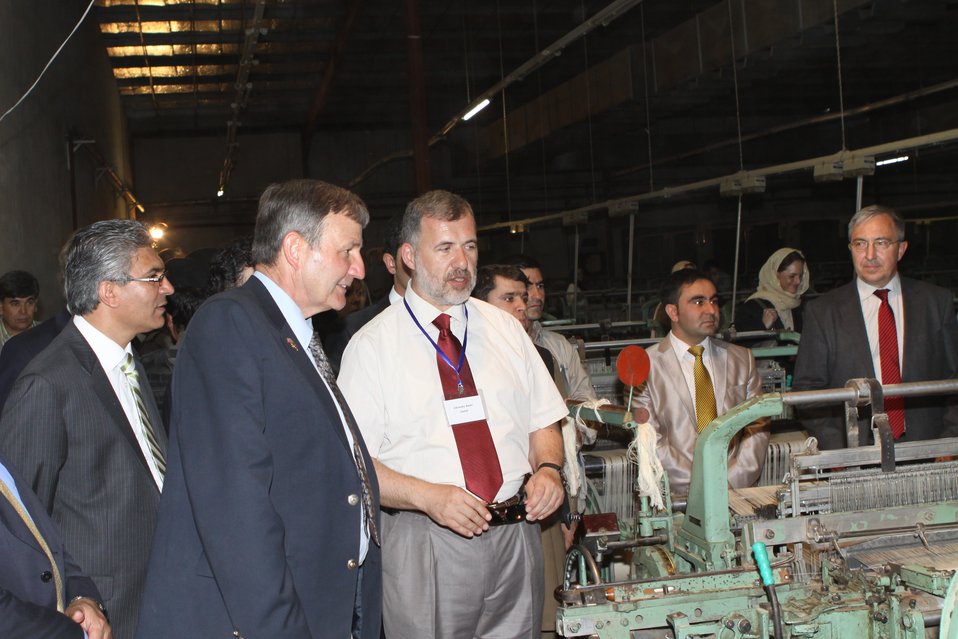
100525 Hirat Textile Company 758